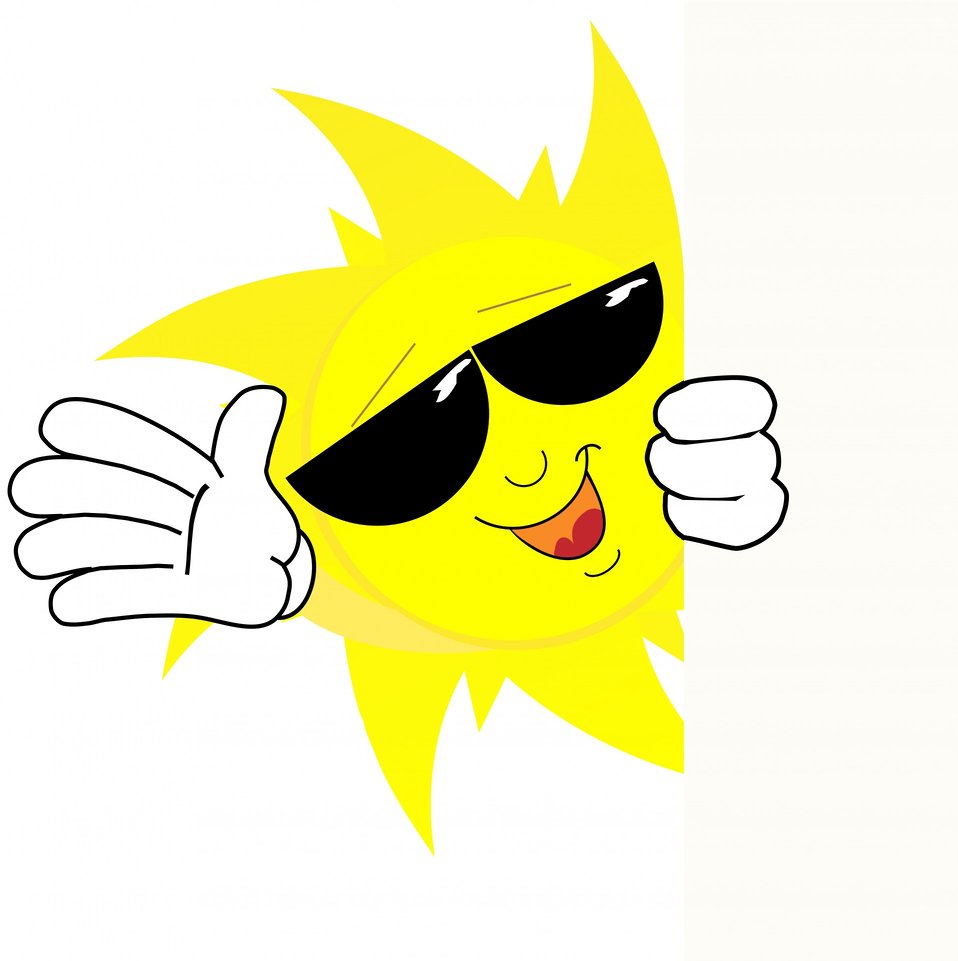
Happy sun face cartoon with big hands and sunglasses clipart.